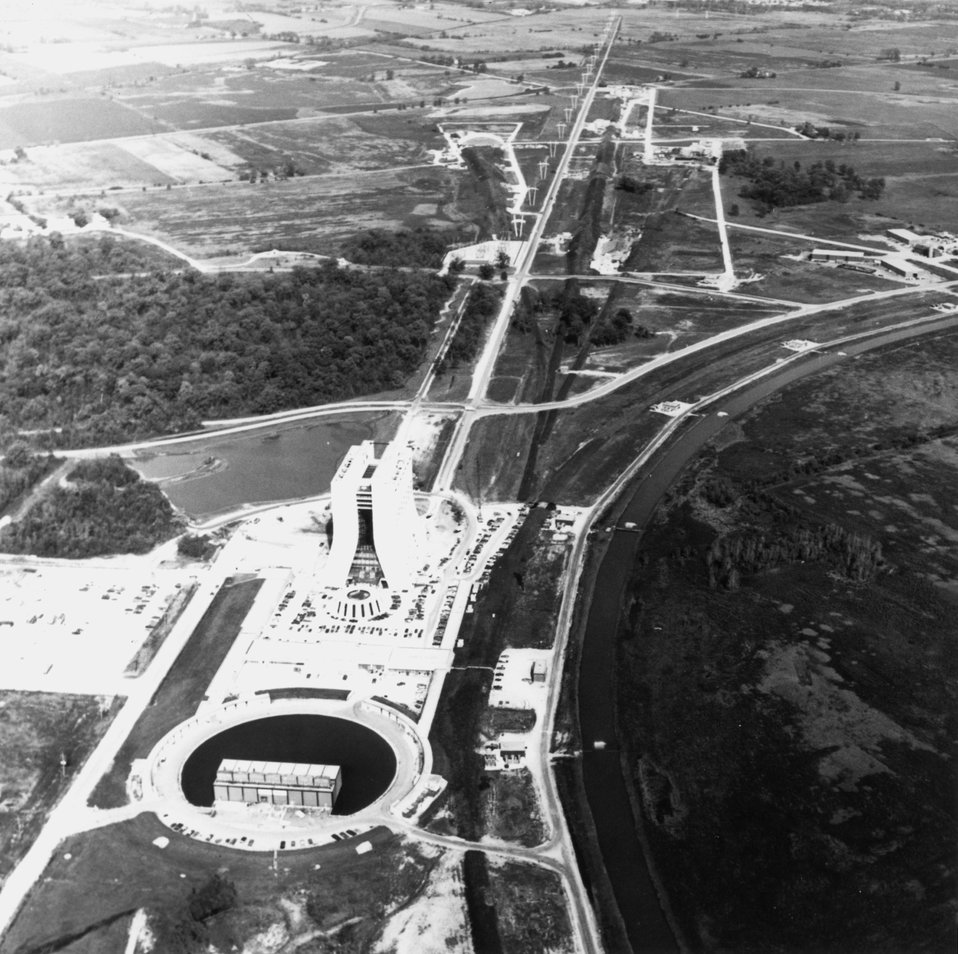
Aerial view of the AEC NAL showing the three external experimental areas in the background, 16 story Central Lab building and circular auditorium in the middle booster cooling pond and utility building in foreground.
c.1974